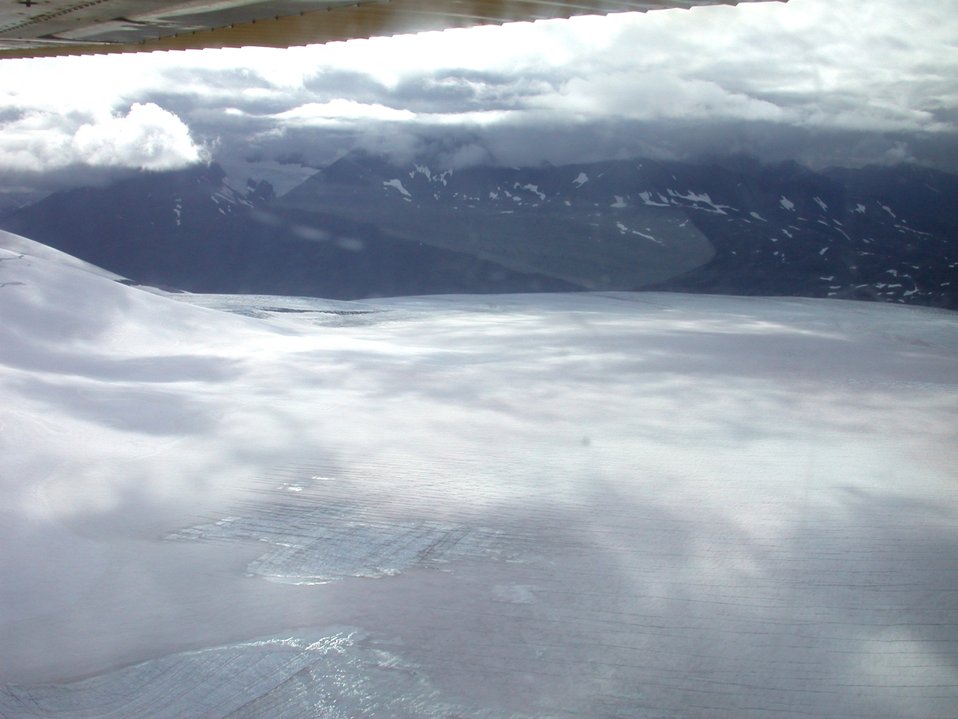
Float plane sightseeing along the Richardson Highway. Note cracks in glacier.